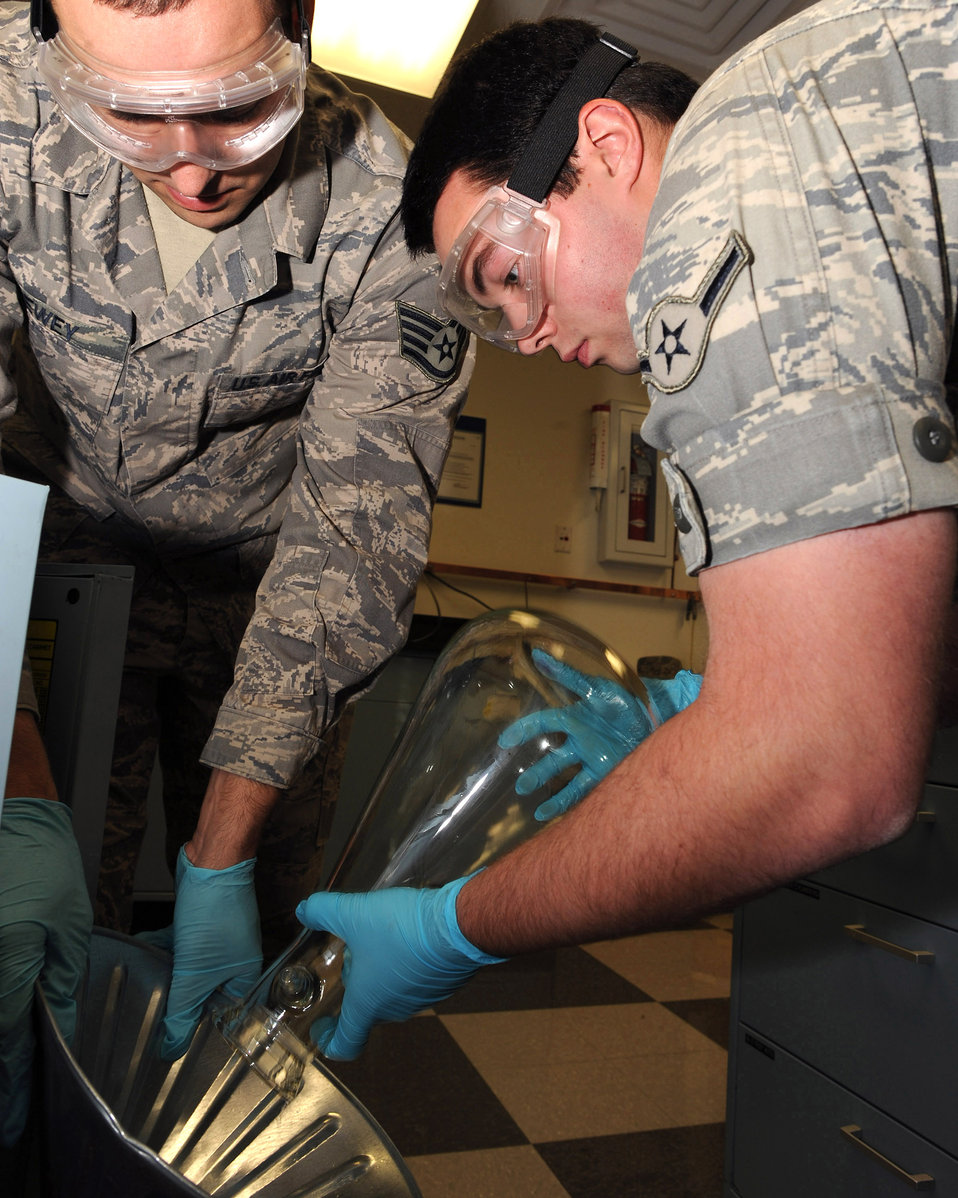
Airman Lucas Berg pours excess JP-8 fuel into a funnel held by Staff Sgt. Clint Lewey Oct. 21, 2009, at Little Rock Air Force Base. Ark. The fuels lab technicians are responsible for making sure the fuel is checked for quality, cleanliness, and the mixture of the fuel is within specifications. Airman Berg and Sergeant Lewey are assigned to the 19th Logistics Readiness Squadron.